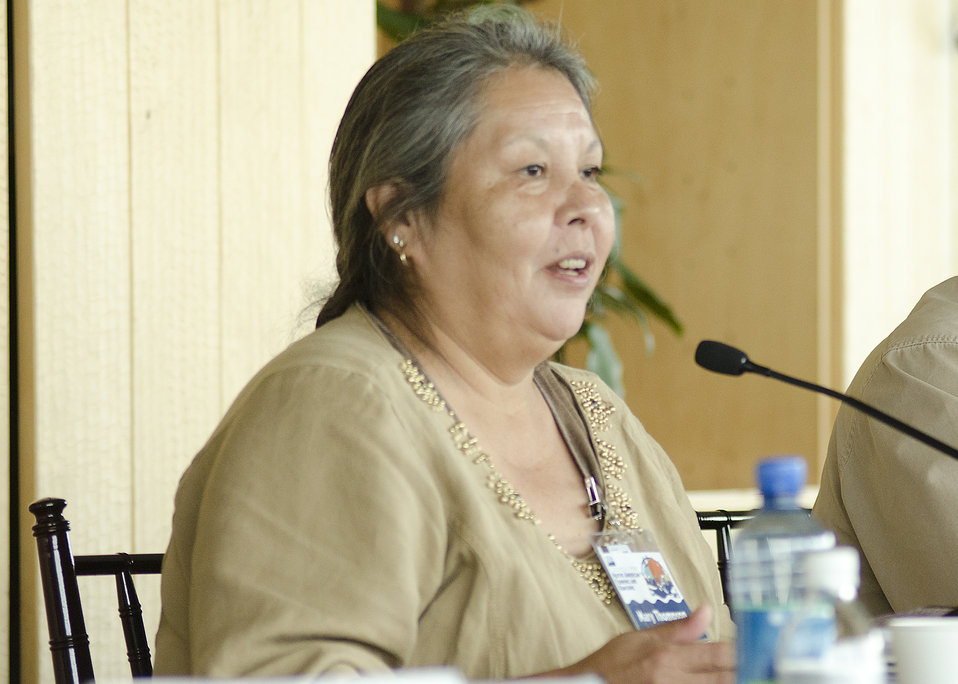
Rancher/Farmer of the Eastern Band of Cherokee Indians in Cherokee, NC., Mary Thompson speaks at the closing session of the first business meeting of the U.S. Department of Agriculture’s (USDA) Council for Native American Farming and Ranching (CNAFR) held at the National Museum of the American Indian in Washington, D.C., on Wednesday, Aug. 15, 2012. CNAFR was created to advise the Secretary on ways to eliminate barriers to participation for Native American Farmers and Ranchers in USDA programs. The Council was established as part of the Keepseagle settlement, and is conducted under the oversight of USDA's Office of Tribal Relations under the Office of the Secretary of Agriculture.